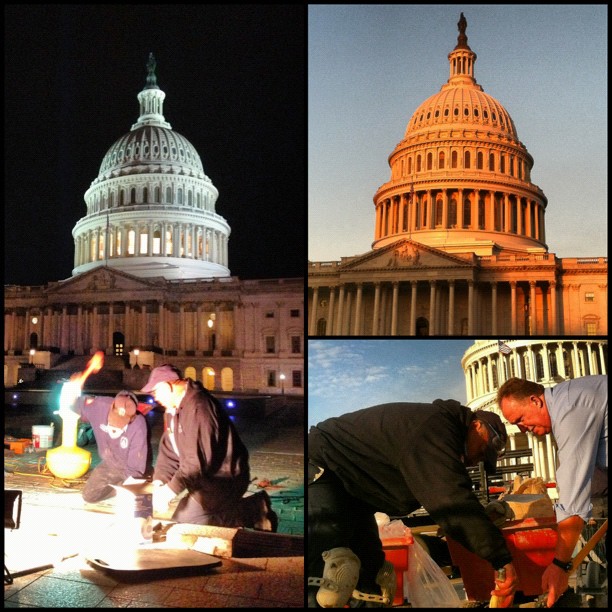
While you were sleeping; AOC masons working at Capitol till sunup. #dc